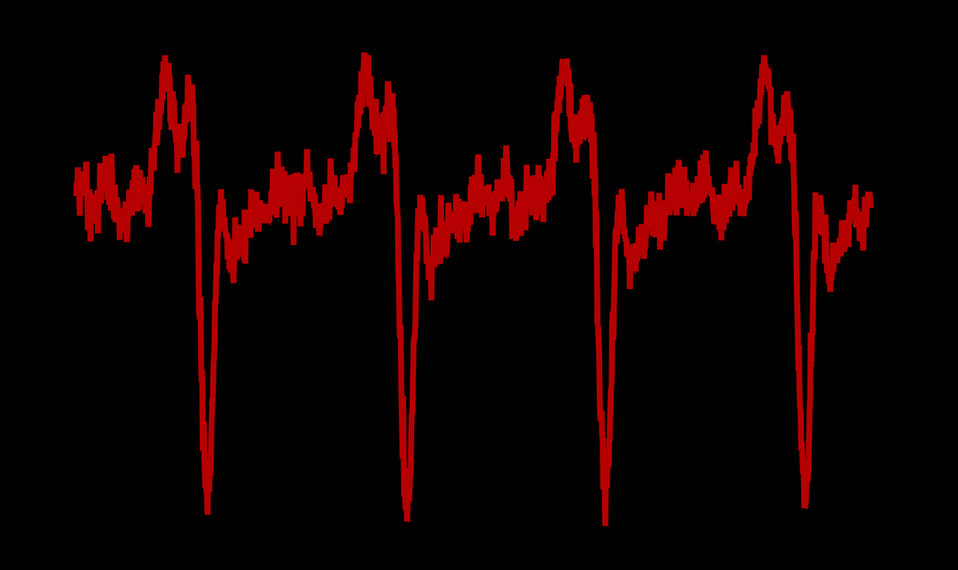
Pulsed Laser

Colorized trace of pulses from the NIST/JILA 'dark pulse' laser, indicating the light output nearly shuts down about every 2.5 nanoseconds.